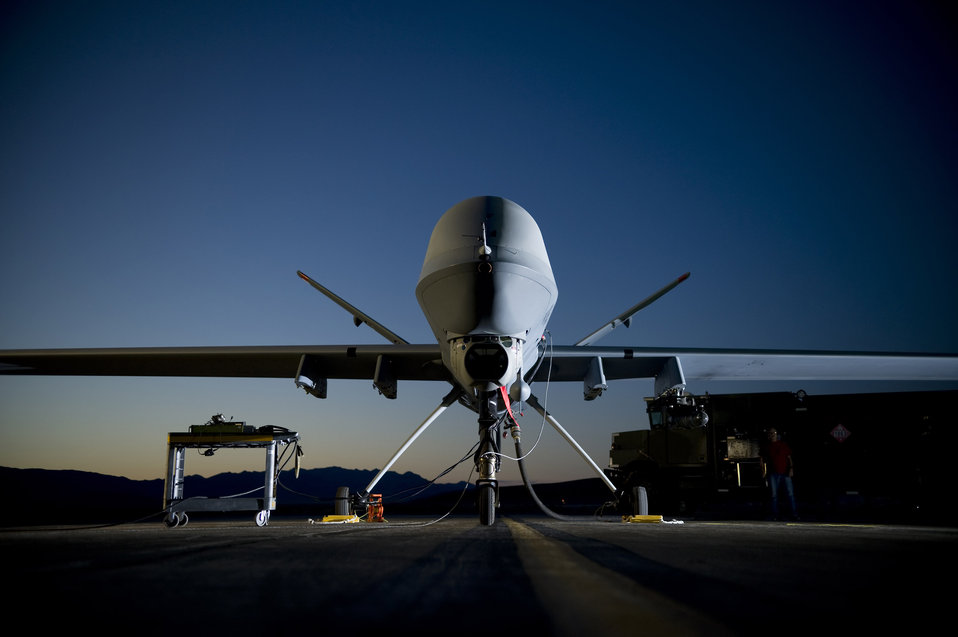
Air Force, Army leaders discuss new UAS concept of operations

General Atomics Aeronautical Systems contractors refuel a MQ-9 Reaper at Creech Air Force Base, Nev., June 19. Calif. Gen. John D.W. Corley, Air Combat Command commander, met with Army Gen. William S. Wallace, Army Training and Doctrine Command commanding general, June 30 to discuss a new concept of operations that would maximize the contributions unmanned aerial systems bring to the joint warfighter.